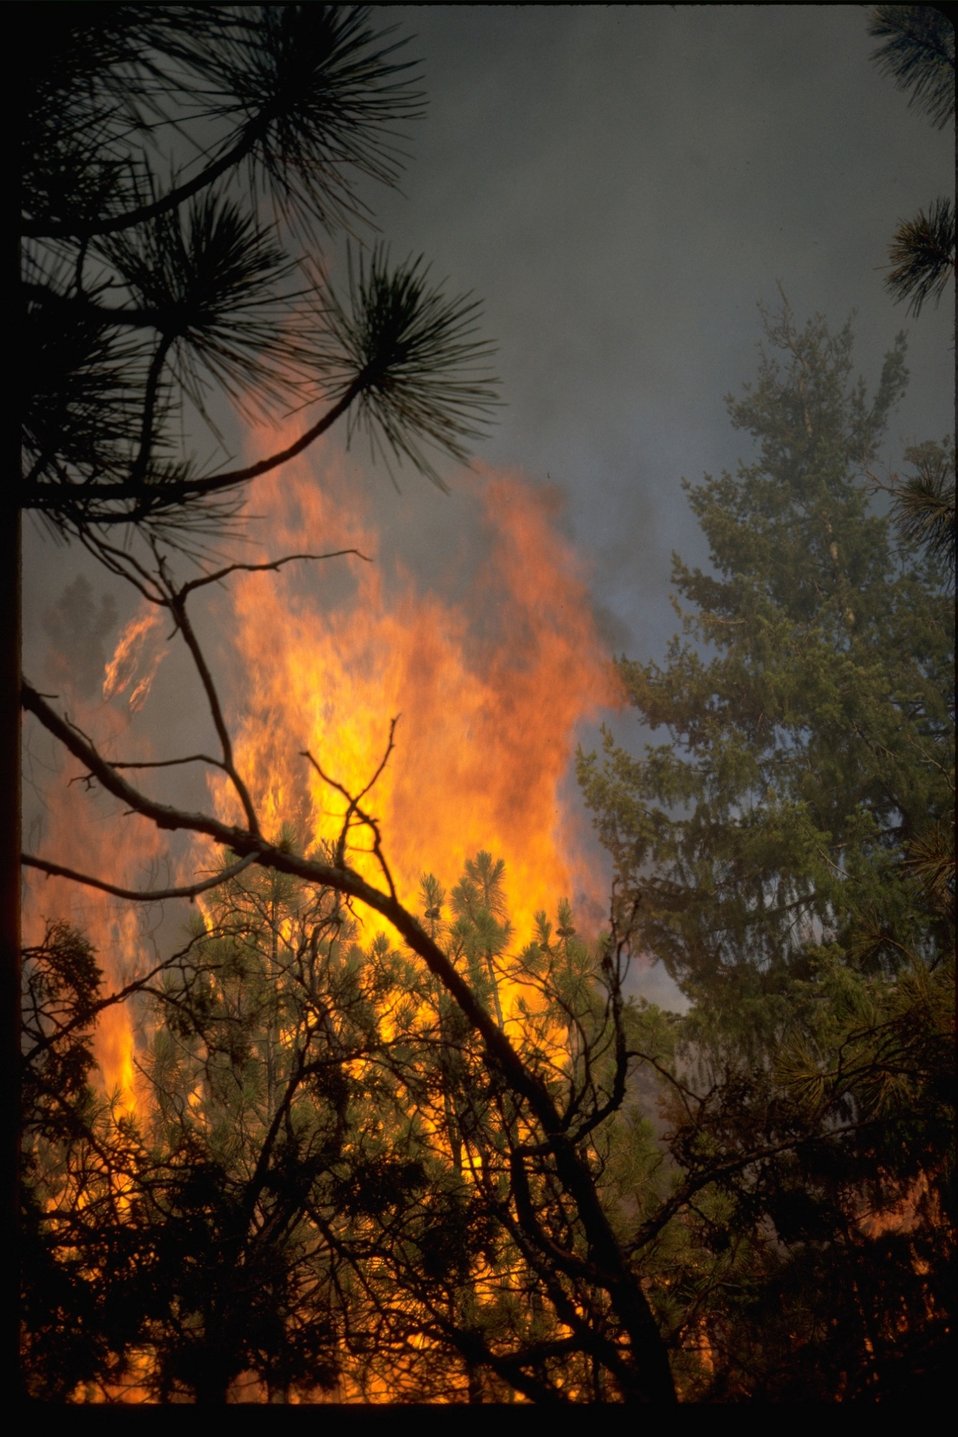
Fire in the trees.